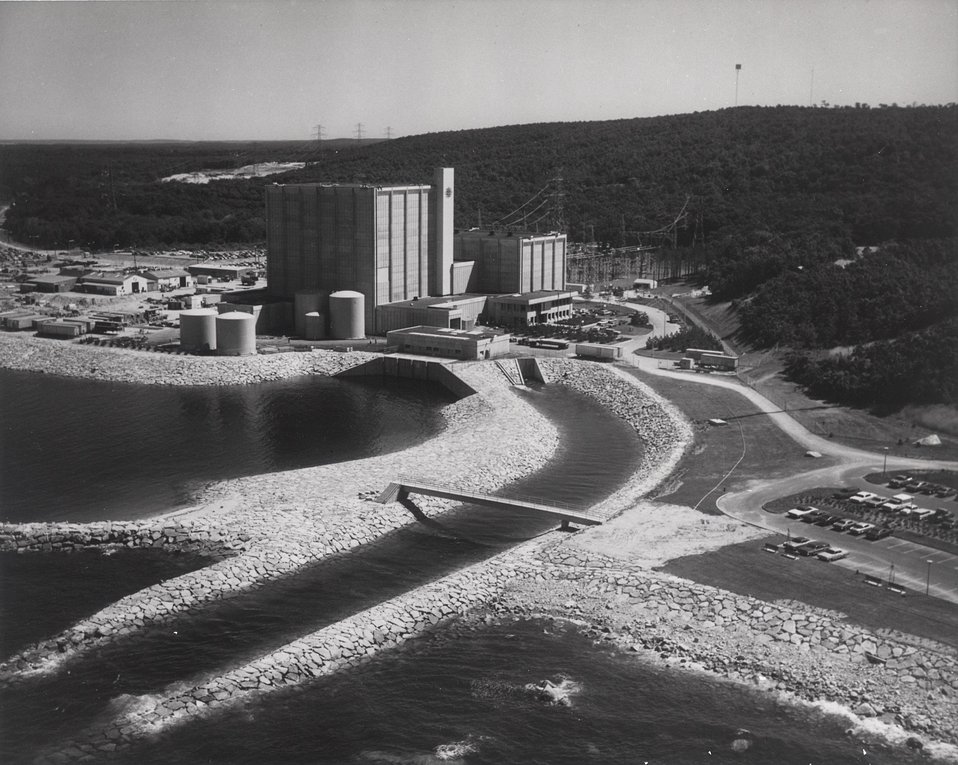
Boston Edison Company's Pilgrim Station Unit 1 at Plymouth, Mass. An 1800 foot breakwater juts from a two-acre recreation spot called the 'Pilgrim Shorefront.' Circa 1972.